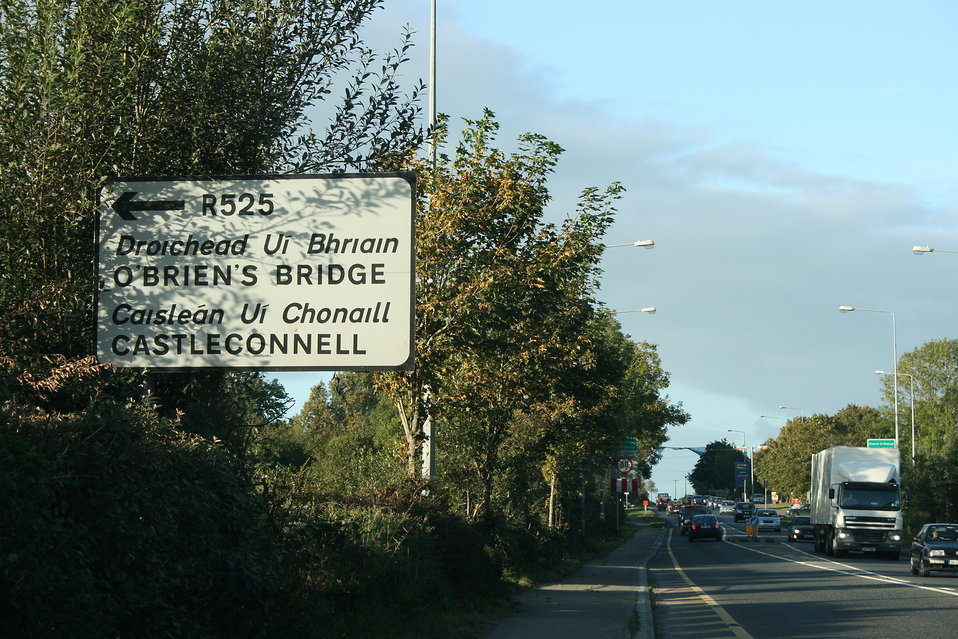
Daly's Cross on the N7 in County Limerick, Ireland